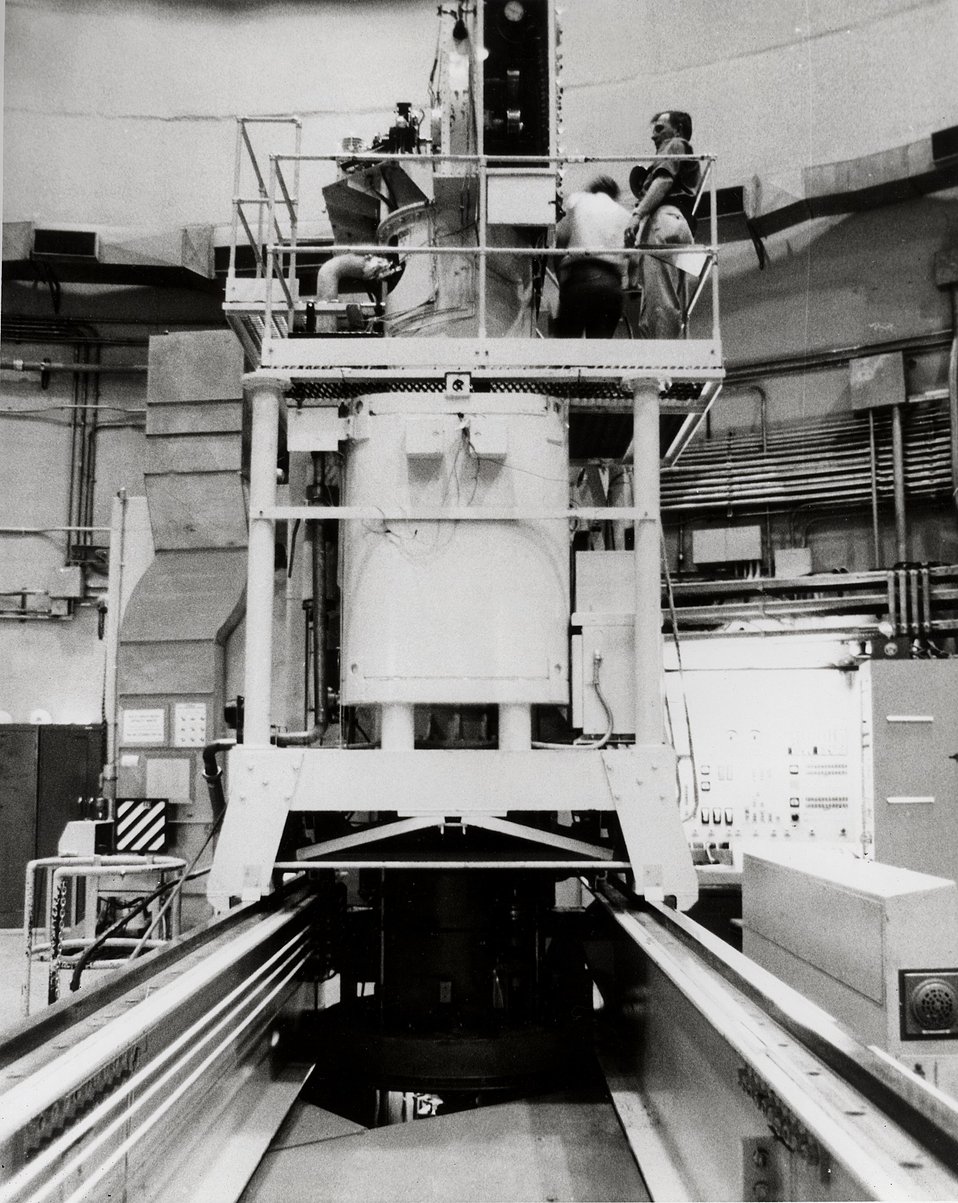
the Fuel Unloading Machine is used to remove radioactive fuel assemblies from the Experimental Breeder Reactor No 2(EBR-2).
c.1972